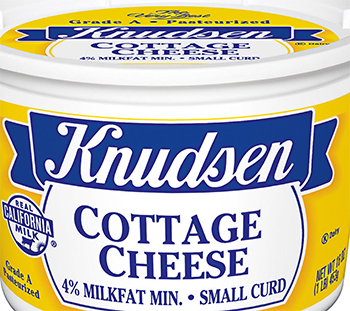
RECALLED – Cottage Cheese products

May 17, 2014 – Product Recall – Kraft Foods Group Voluntarily Recalls Select Cottage Cheese Products Due to Out-of-Standard Storage Temperatures
Certain Knudsen Cottage Cheese, Breakstone’s Cottage Cheese, Simply Kraft Cottage Cheese and Daily Chef Cottage Cheese Products Included in the Recall
.